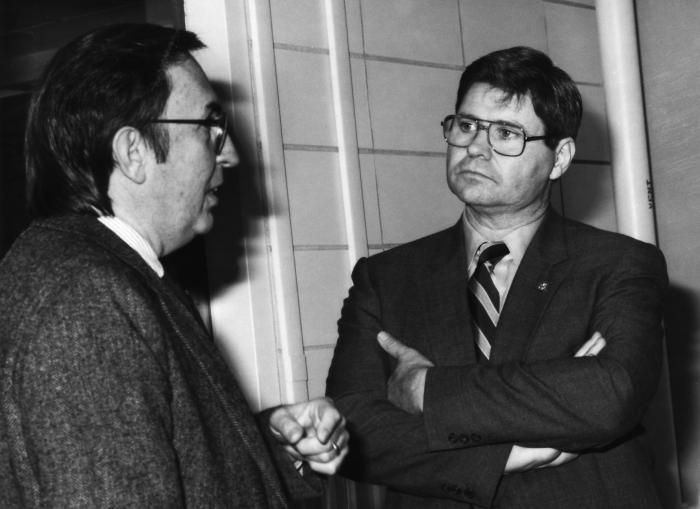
Frederick A. Murphy, D.V.M., Ph.D. (left), was shown as he was greeting Georgia Congressional Representative, Ben Jones (D-GA), on the occasion of the Congressman's visit to the Centers for Disease Control in 1989.